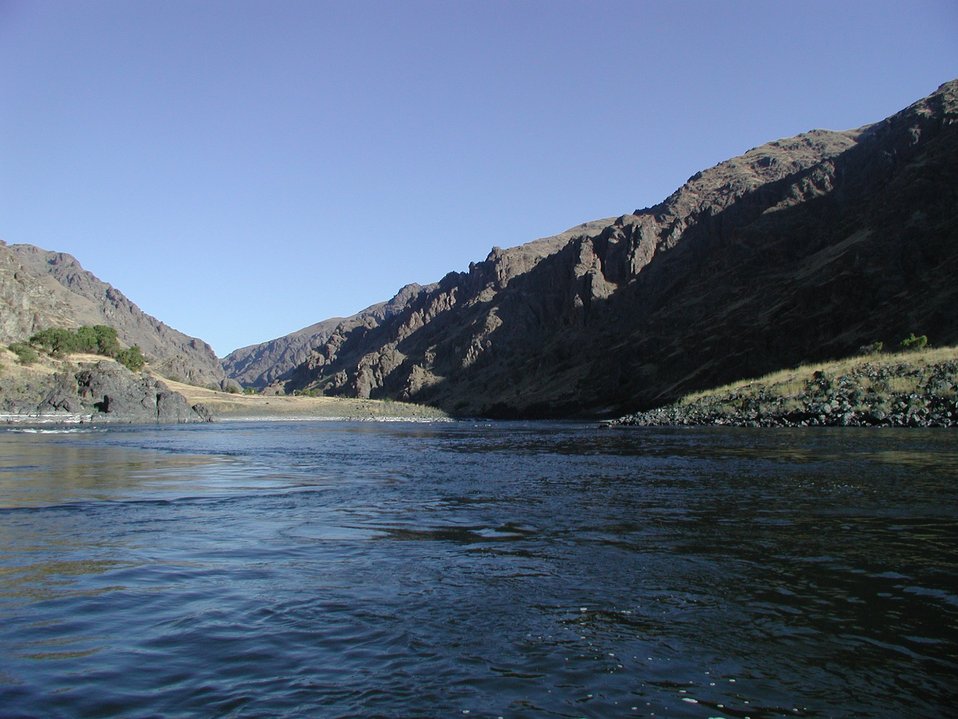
Scenic shot of Lower Salmon River Cottonwood Field Office UCSC Upper Columbia Salmon Clearwater District